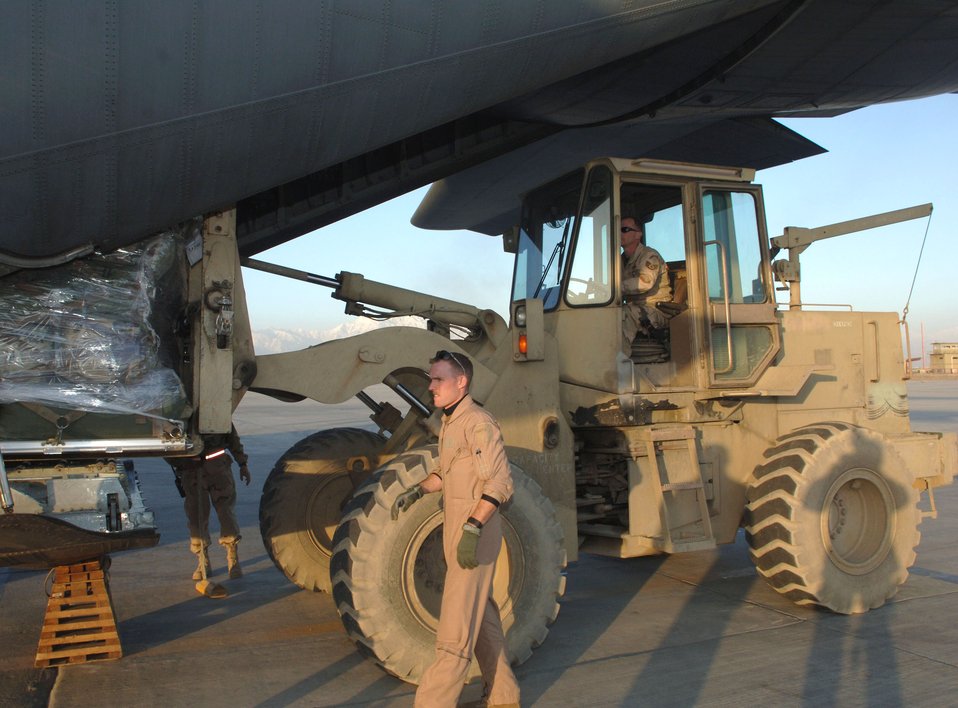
CENTAF airpower summary for 7 March, 2007

Tech. Sgt. Matthew Lamonds directs Staff Sgt. Brian Eck as he places a cargo pallet into a C-130 Hercules. The C-130 provides tactical airlift for Operation Enduring Freedom. Sergeant Lamonds is a loadmaster assigned to the 774th Expeditionary Airlift Squadron, and Sergeant Eck is part of the 455th Expeditionary Logistics Readiness Squadron.